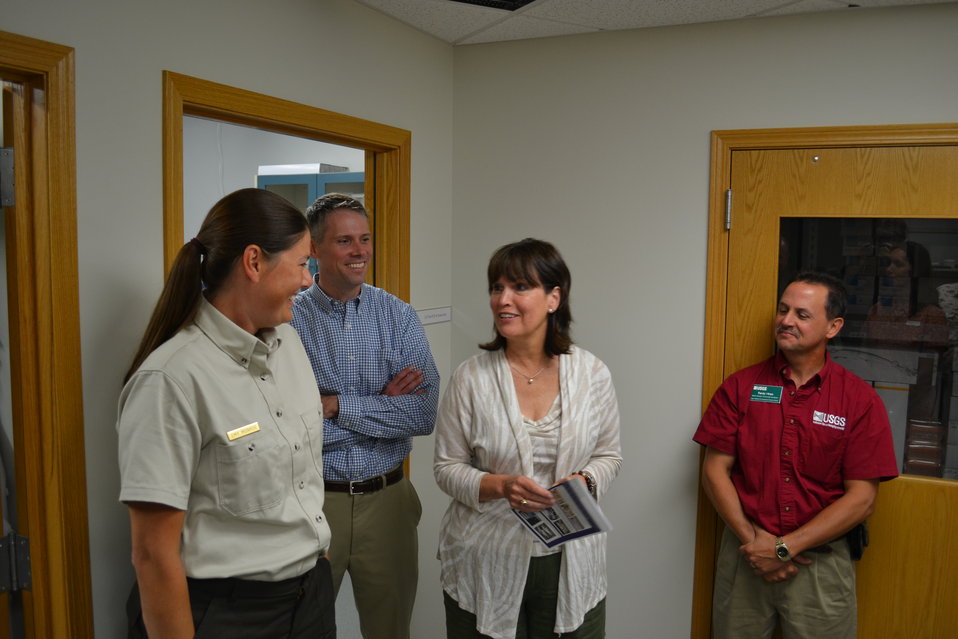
Discussing eDNA

From left to right: Emy Monroe (geneticist, U.S. Fish and Wildlife Service; Josh Straka (District Director for Rep. Betty McCollum); Rep. Betty McCollum (D-Minn.); Randy Hines (outreach coordinator, U.S. Geological Survey).